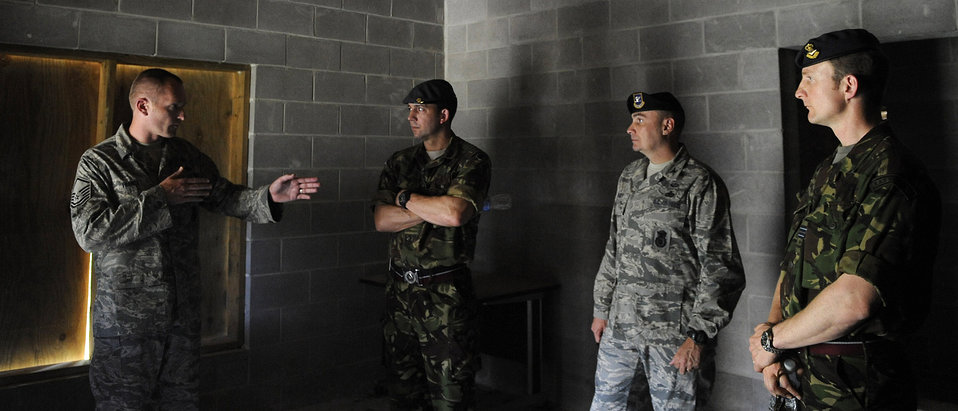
RAF officers spin-up on 820th SFG roles, mission, training

Master Sgt. Jason France (left) explains tactics at the military operations in urban terrain training village here to members of Royal Air Force May 20. The 820th SFG uses the MOUT for tactical training in an urban environment. Sergeant France is the 820th Security Forces Group operations superintendent.